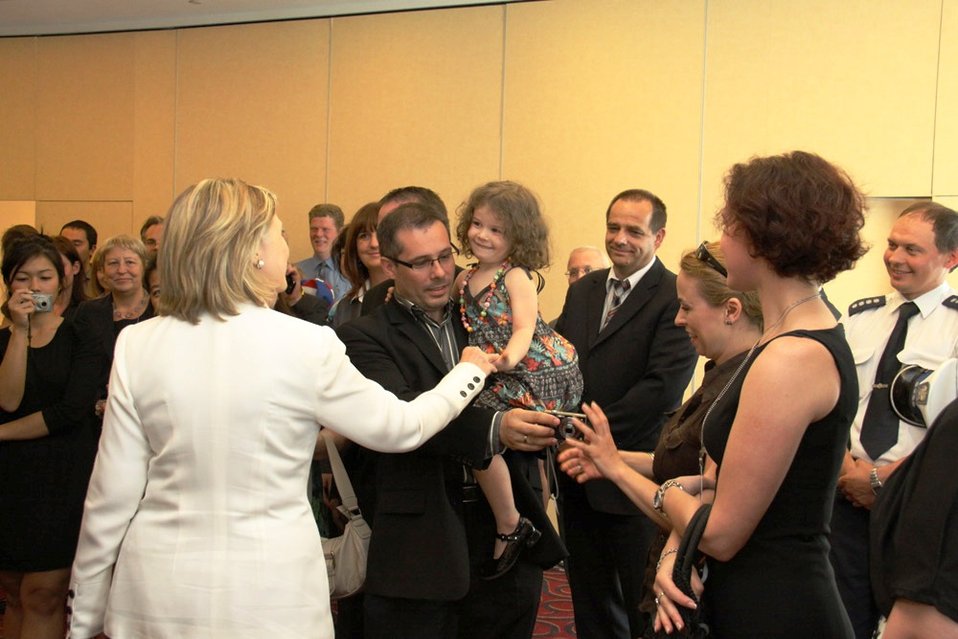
Secretary Meets With Embassy Warsaw and Consulate Krakow Staff and Families

U.S. Secretary of State Hillary Rodham Clinton meets with the staff and families of the U.S. Embassy Warsaw and U.S. Consulate Krakow in Poland on July 3, 2010.